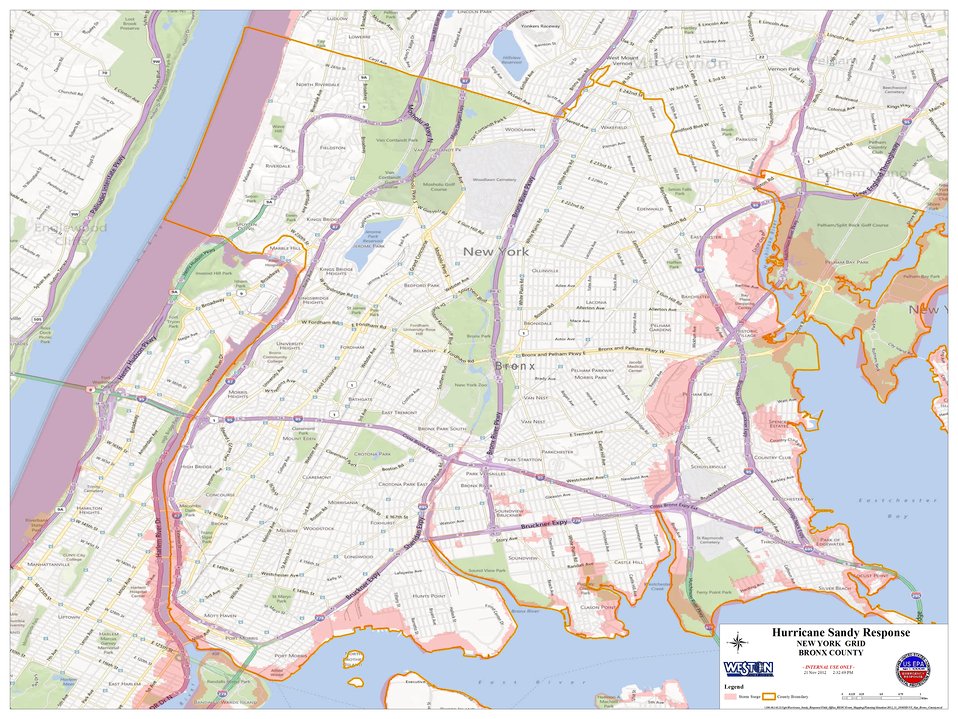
Hurricane Sandy Hazardous Waste Pickup Sites - Bronx County

We're working with the New York City Department of Sanitation to collect and properly dispose of potentially hazardous common household products from flood-damaged homes and residences in New York City through Dec. 2, 2012. Here's the map for Bronx County.